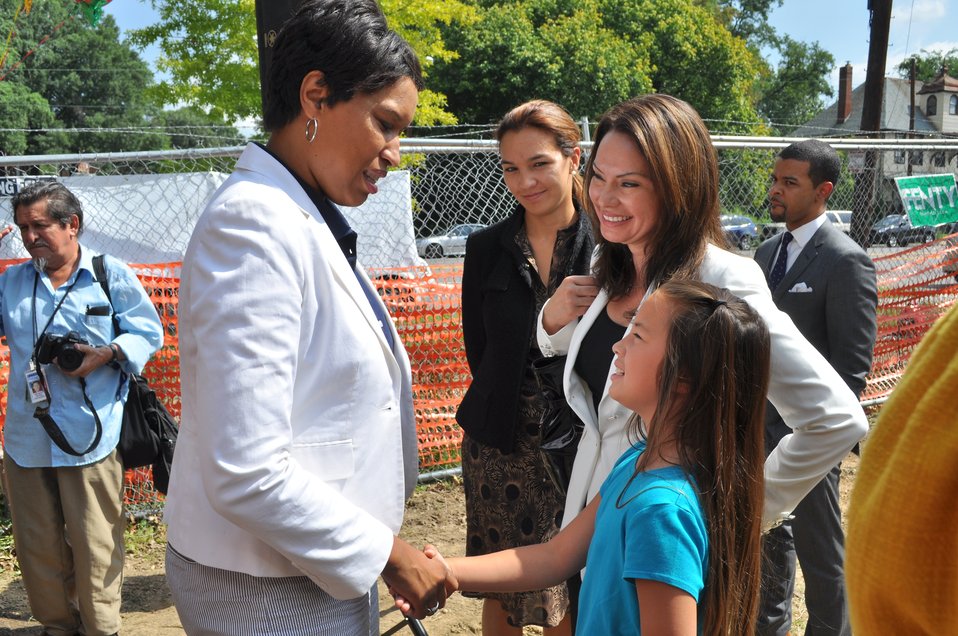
Treasurer Rios at a groundbreaking on new Vida Senior Residence funded in part by the Recovery Act, 7/27/2010

Ward 4 Councilmember Muriel Bowser meeting Treasurer Rosie Rios and her daughter Brooke before the ground breaking ceremony.